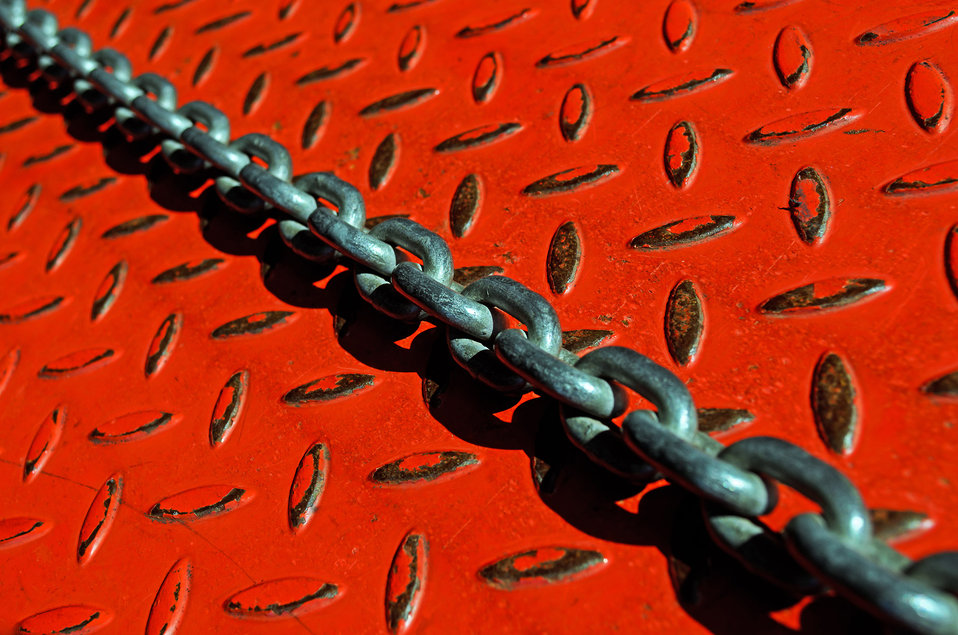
Iron background.